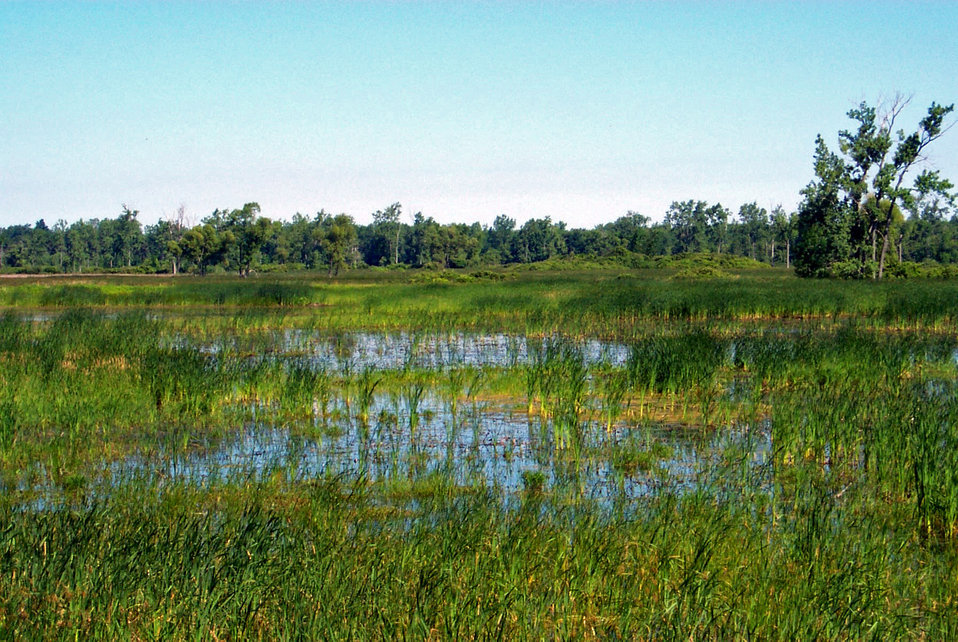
Emergent marsh

Iroquois National Wildlife Refuge, New York.